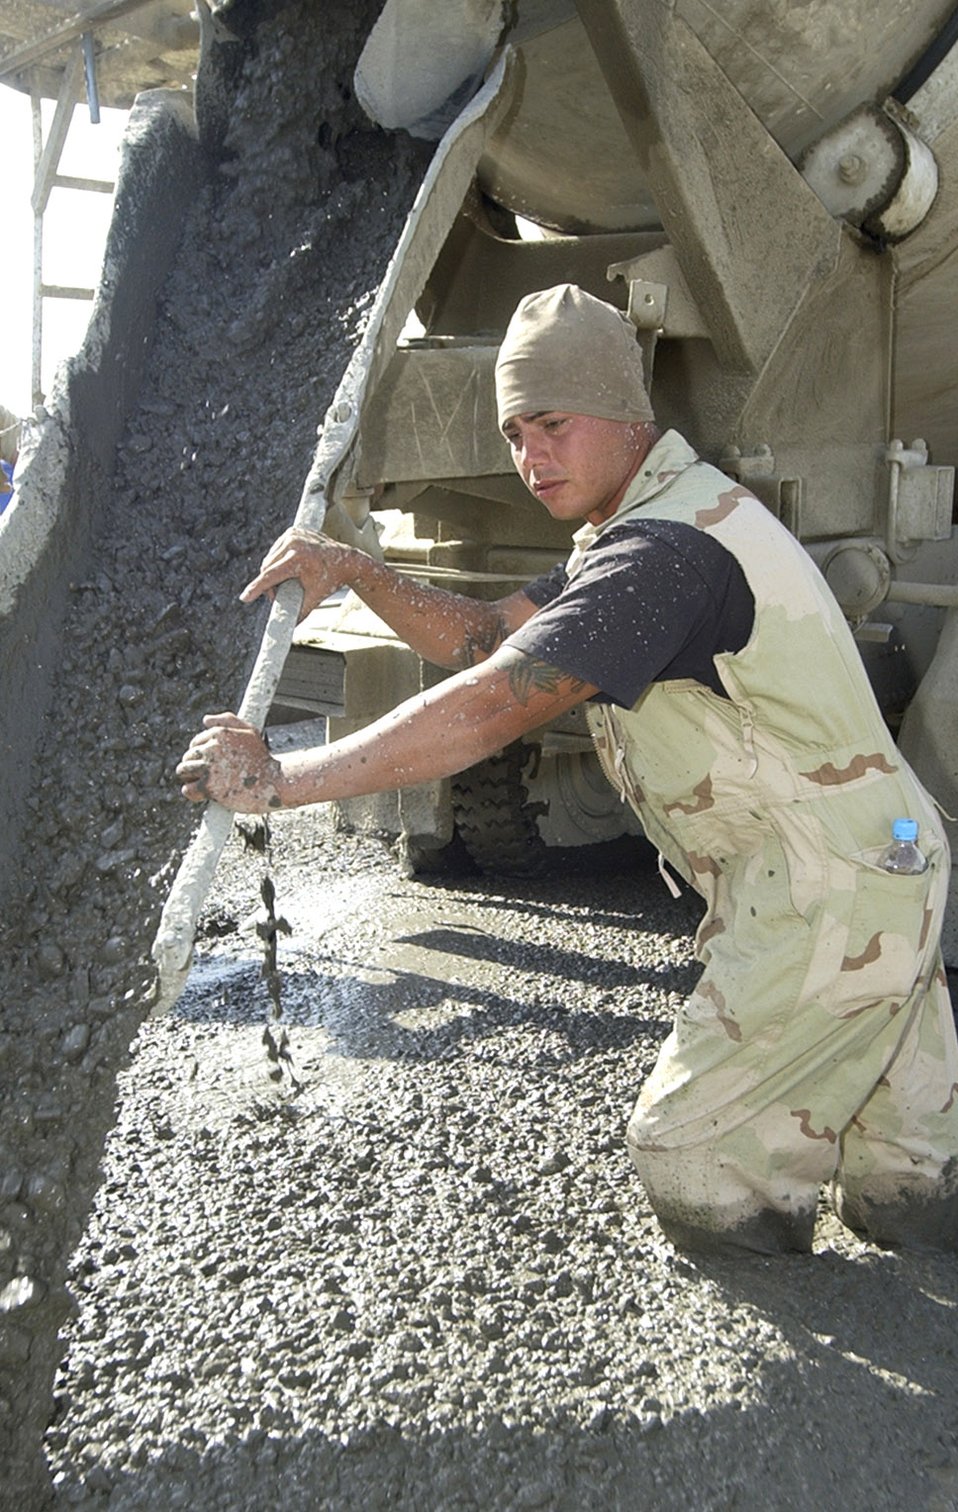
Teamwork, skepticism lead to early finish for project

Senior Airman Miguel Gasstelum pours concrete as part of an $8.9 million ramp renovation at Bagram Air Base, Afghanistan, Oct. 1. The 270,000-square-foot concrete ramp is expected to enhance air operations during Afghanistan's harsh winters. Airman Gasstelum is with the Air Force 1st Expeditionary Red Horse Squadron at Bagram AB.